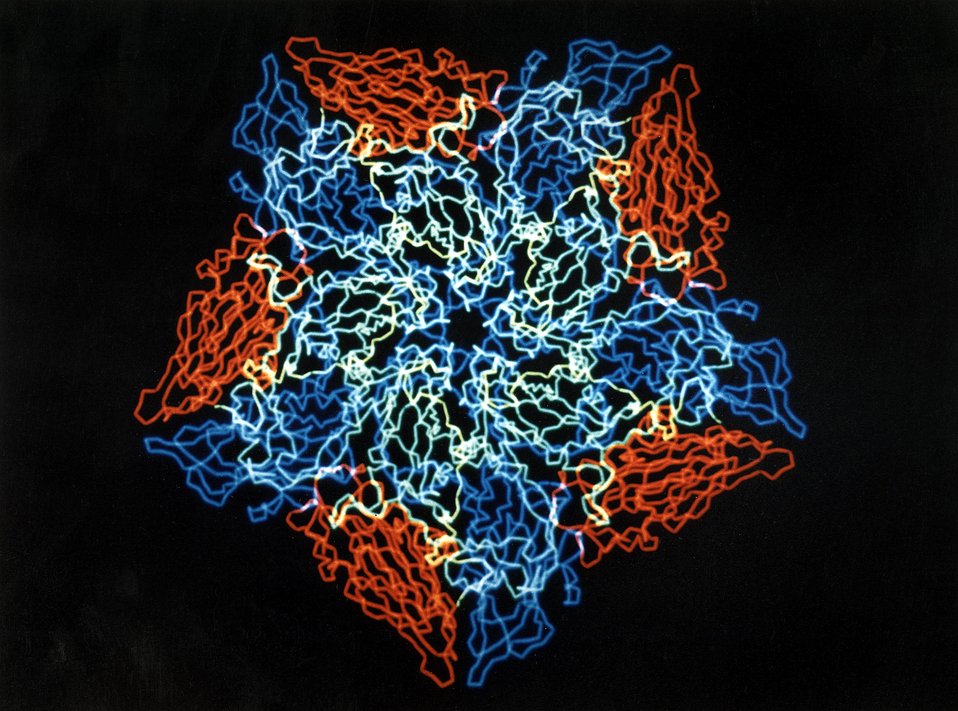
The Many Faces of Cold Virus HRV14. The protein coat of the human rhinovirus HRV14 is composed of 12 'pentameric caps,' each containing five copies of the three coat proteins, VP1, VP2, ans VP3. The computer reconstruction shown here illustrate one of these fivefold-symetric units, with red, green, and blue used to denote the three constituent proteins.